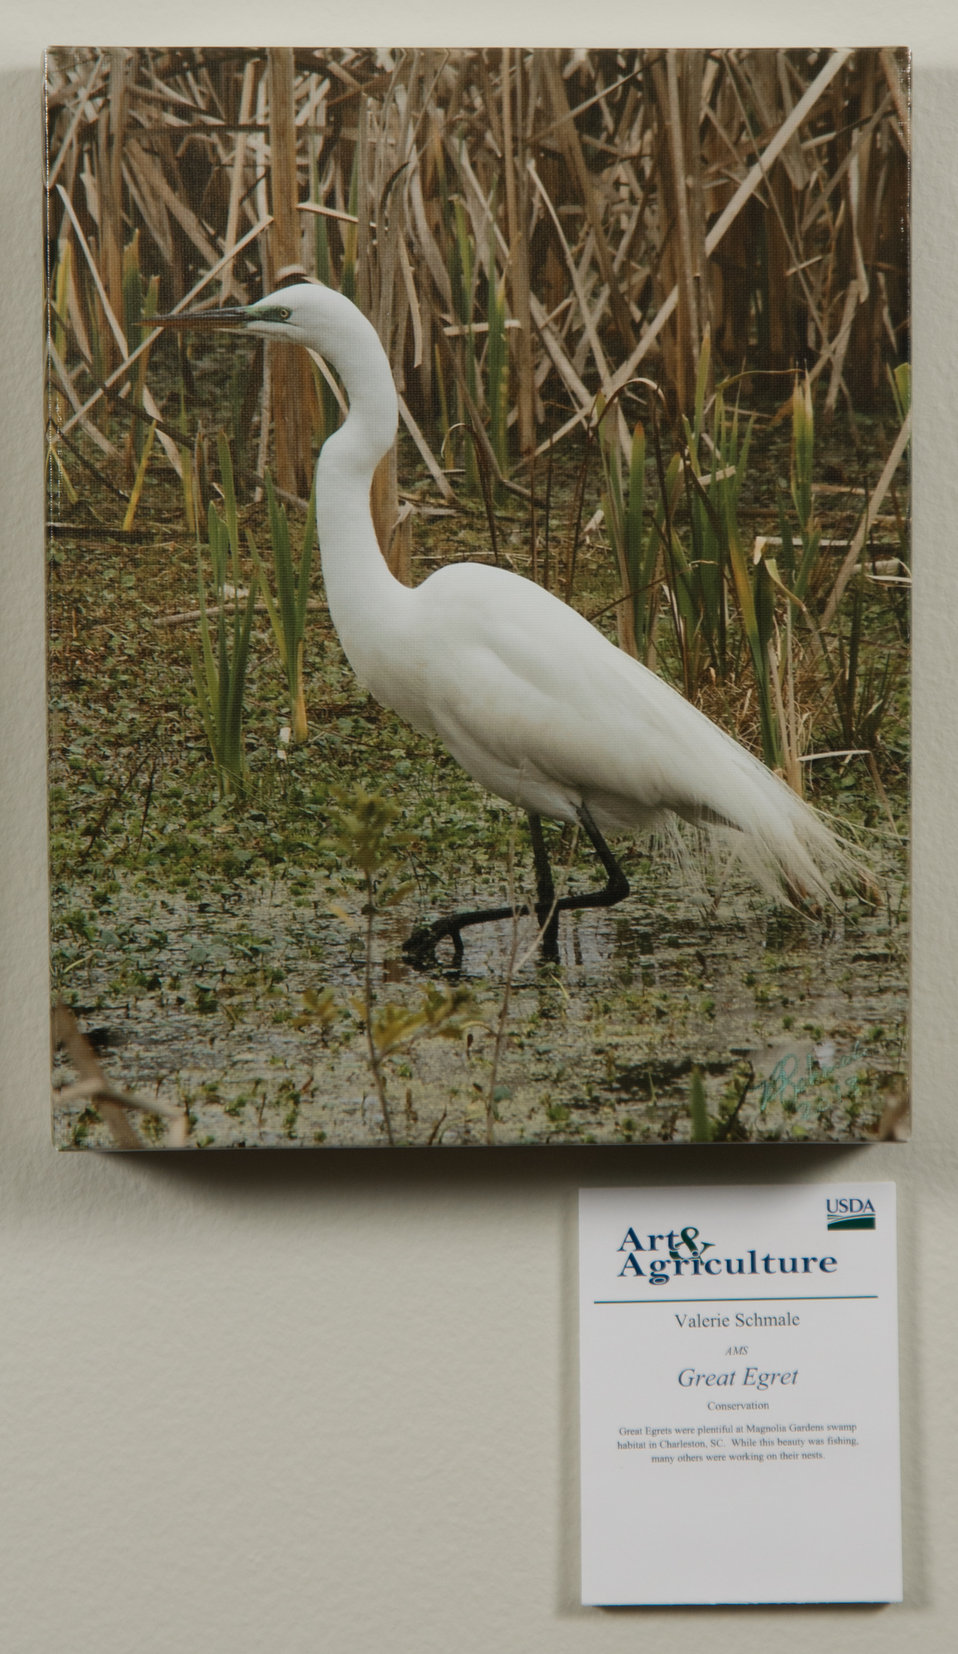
Online Viewer's Choice entries of the 2013 Art & Agriculture, Tuesday, July 9, 2013, in the South Building, Washington, D.C. Themes were expressed by employees from across the department and the contest was open to full-time and part-time USDA employees. Winning artwork will be displayed till the end of the year. U.S. Artistic expression is a creative outlet that is vital for an individual to grow and develop.